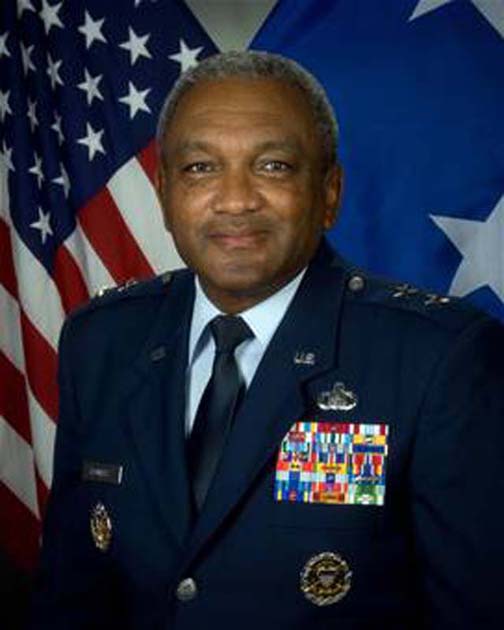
Maj. Gen. Alfred K. Flowers, longest serving Airman and longest serving African-American service member in DoD.